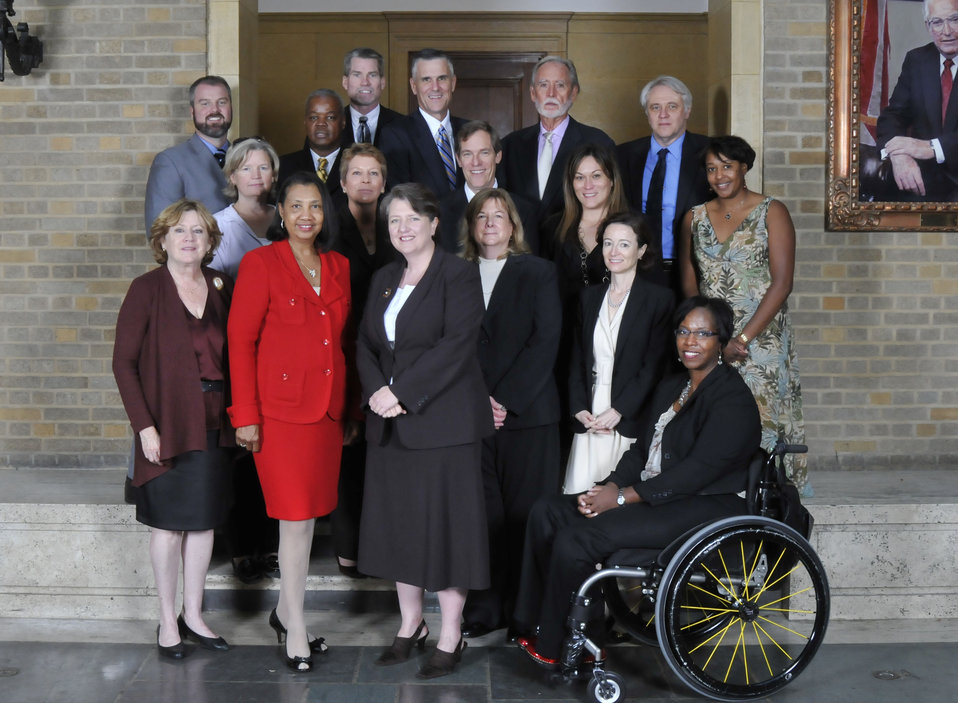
Cultural Transformation Taskforce
Departmental Management, Washington, DC
Pearlie S. Reed & Alma C. Hobbs, Group Leaders
For your unwavering service and commitment to changing the culture of USDA.
On September 14, 2011 in the patio of the Whitten Building Patio of the US Department of Agriculture in Washington, DC.